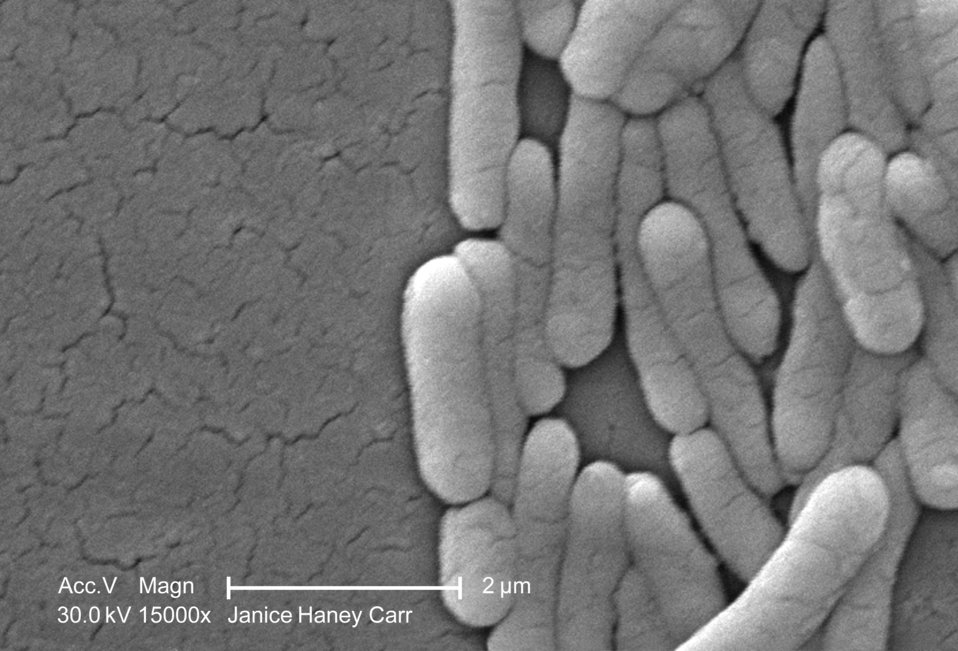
Under a very high magnification of 15000X, this scanning electron micrograph (SEM) revealed the presence of numbers of clustered Gram-negative Salmonella typhimurium bacteria, which had been grown in a pure culture. See PHIL 10973 for a colorized version of this image.What sort of germ is Salmonella?